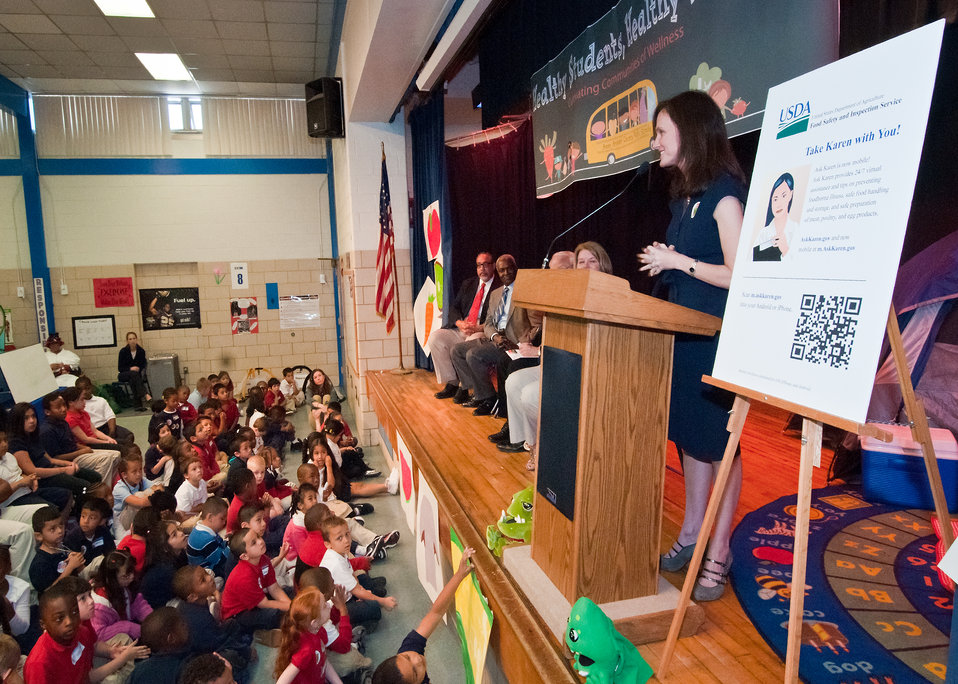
Dr. Elizabeth Hagen, Undersecretary, Food Safety explains the importance of good nutrition and exercise to students at Maryland City Elementary School in Laurel, Maryland during a United States Department of Agriculture, Food Safety Inspection Service, Food Safety Education Camp on Thursday, May 5, 2011.